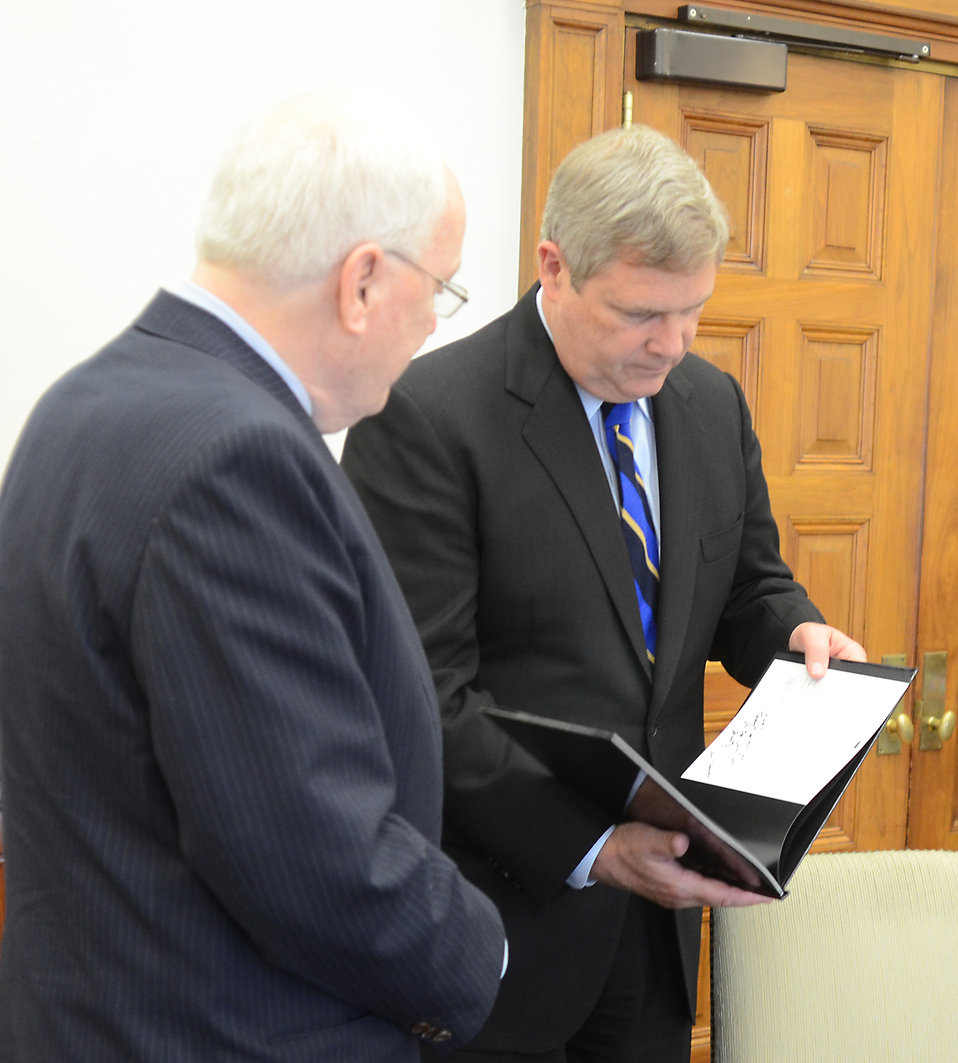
Agriculture Secretary Tom Vilsack (right) presents a book to Dr. Kenneth M. Quinn, former U.S. Ambassador to the Kingdom of Cambodia, and Executive Director of the World Food Prize during the meeting with the Wallace Carver interns at the Whitten Building, U.S. Department of Agriculture in Washington, D.C., on Thursday, June 14, 2012.